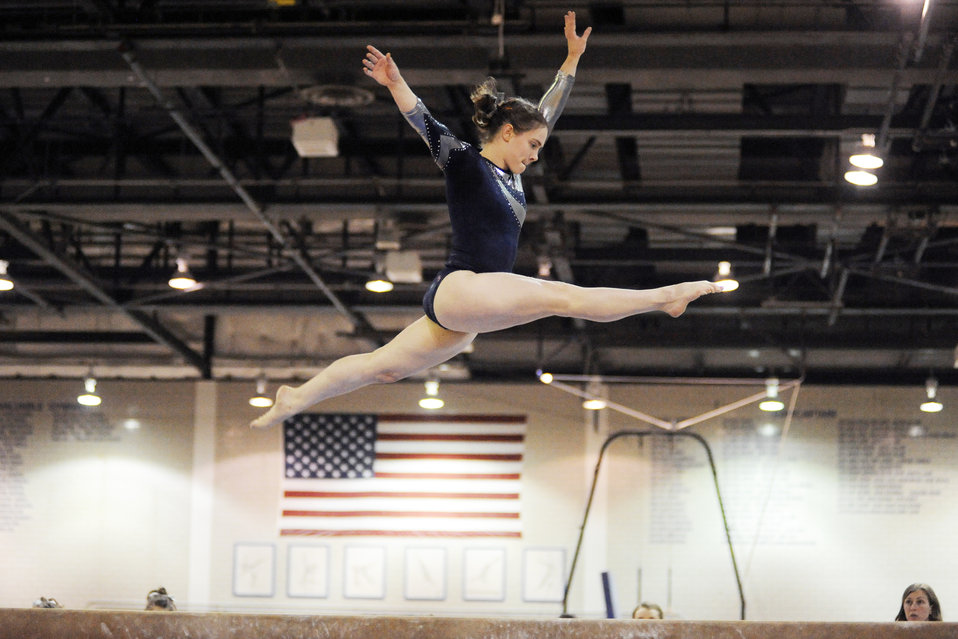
Women gymnasts compete in tri-meet

Falcon sophomore Jenna Dudley competes on the balance beam during the home tri-meet against Southeast Missouri State and Seattle-Pacific in the U.S. Air Force Academy's Cadet Gym Feb. 20, 2010. Air Force placed second in the team competition.